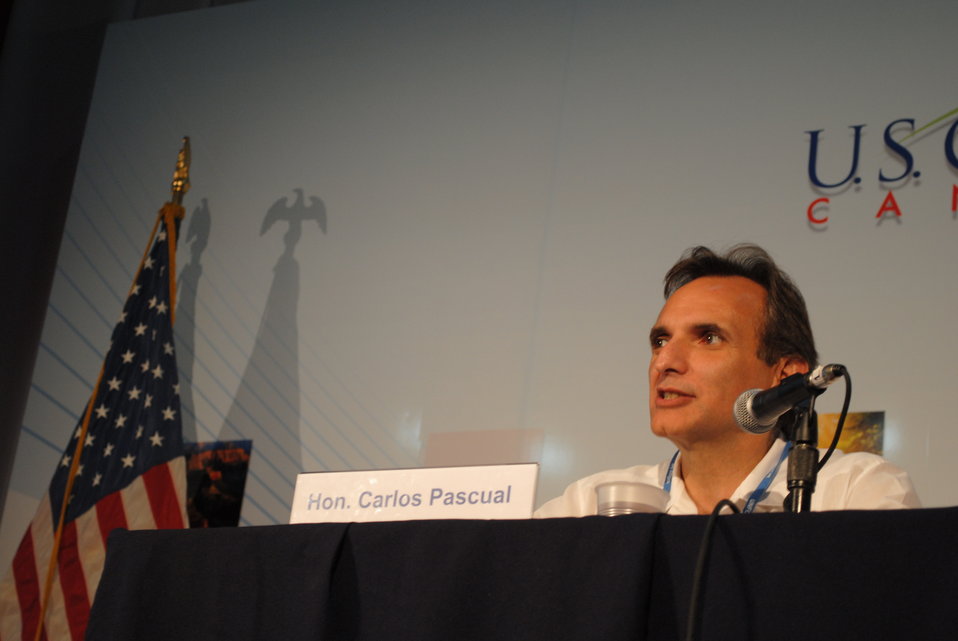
Ambassador Pascual Listens to a Question from the Audience

U.S. Ambassador to Mexico Carlos Pascual listens to a question during the U.S. and Mexico Bi-National Cooperation on Climate Change and Development panel at the U.S. Center at COP-16 in Cancun, Mexico, on December 8, 2010.